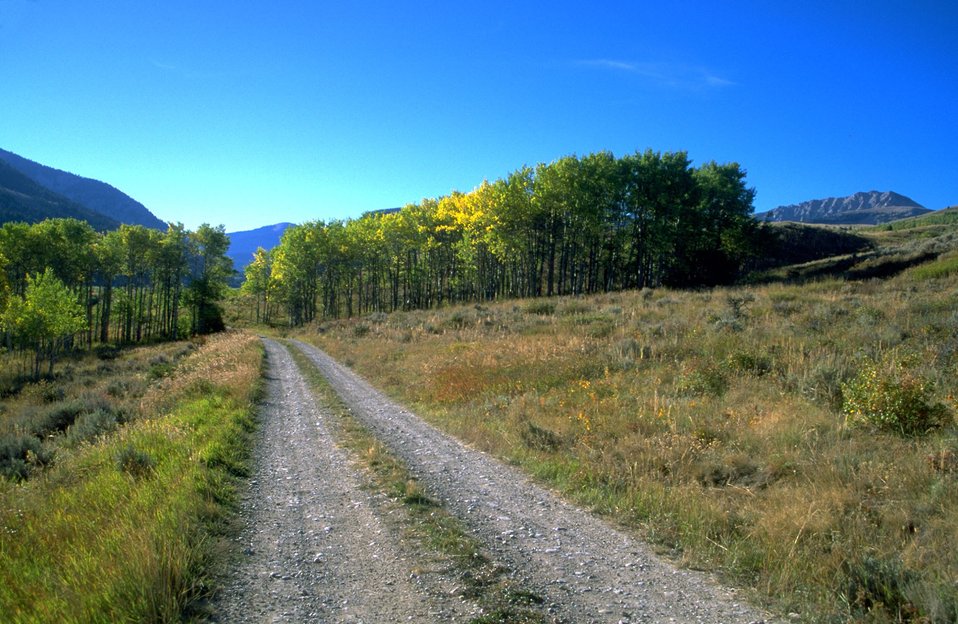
Road leading into Aspen patch